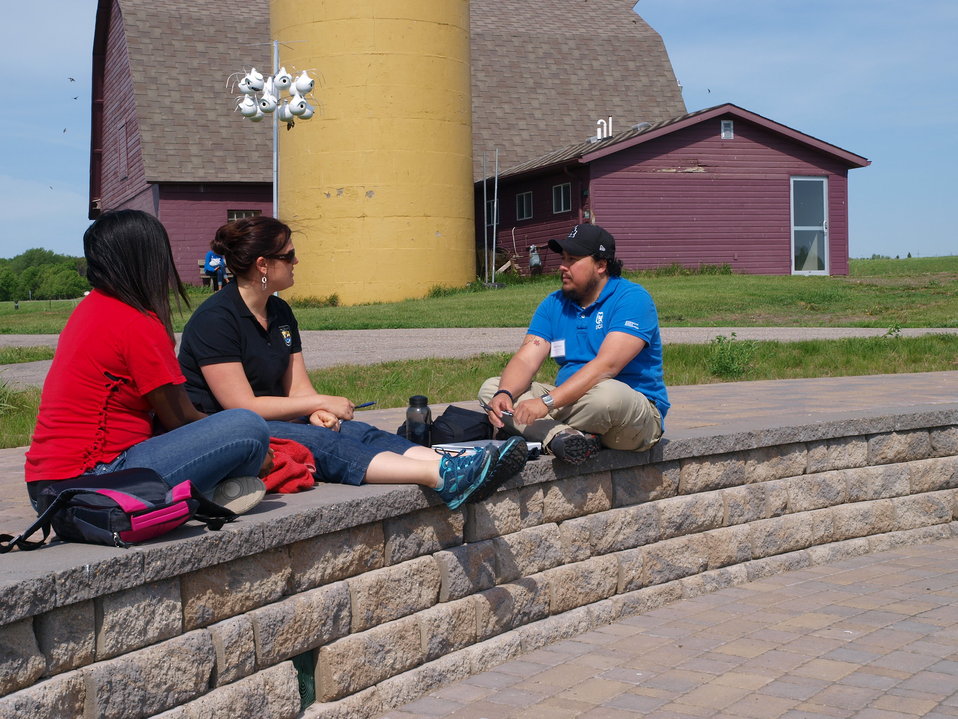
CDIP 2012 Fergus Falls

Kristen and mentees - Brittany and Matt